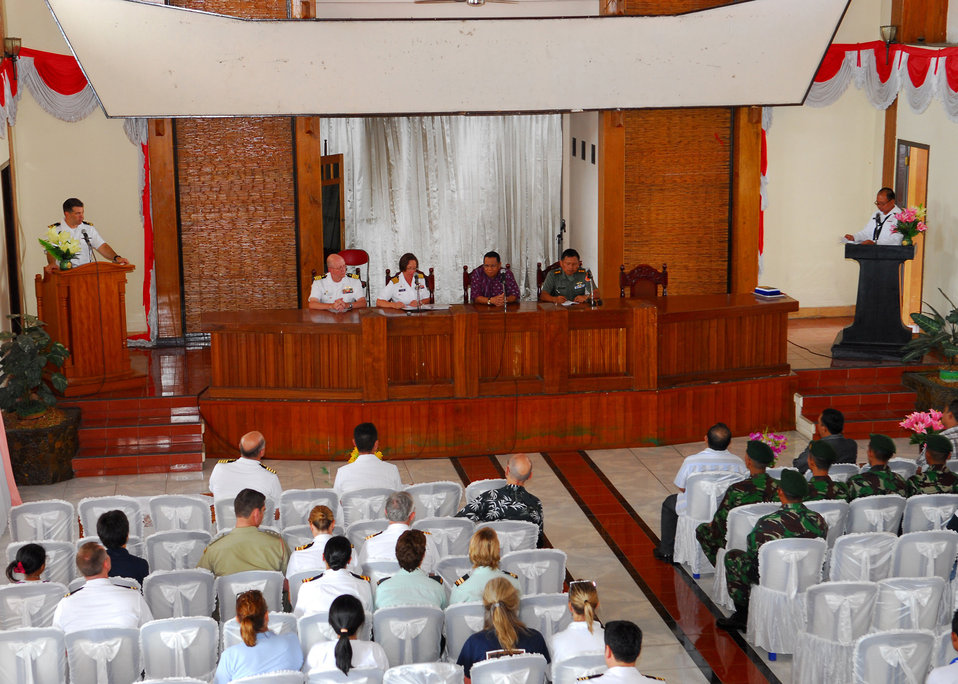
PP 2010 Hosts a Closing Ceremony To Celebrate the Visit to Ternate, Indonesia

Pacific Partnership 2010 hosts a closing ceremony to celebrate the successful visit to Ternate, Indonesia, on July 24, 2010. The Military Sealift Command hospital ship USNS Mercy (T-AH 19) is in the North Maluku Islands conducting Pacific Partnership 2010, the fifth in a series of annual U.S. Pacific Fleet endeavors conducted in Indonesia as a disaster relief exercise aimed at strengthening regional partnerships.